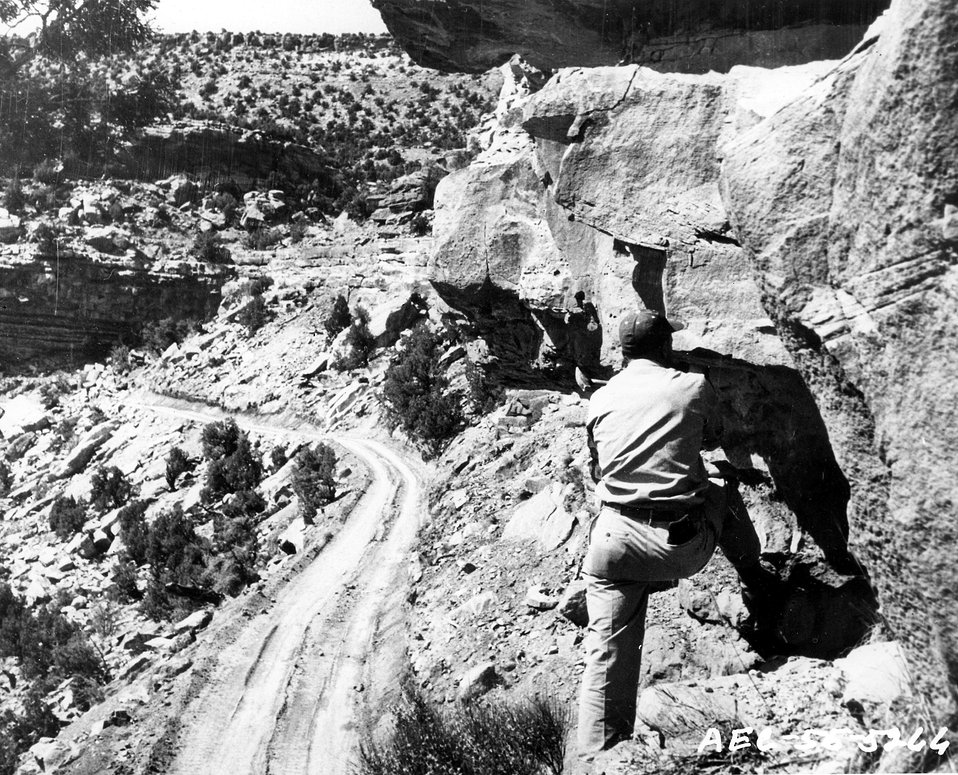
In many areas of the Colorado Plateau, deposits of uranium ore have been found close to the surface.